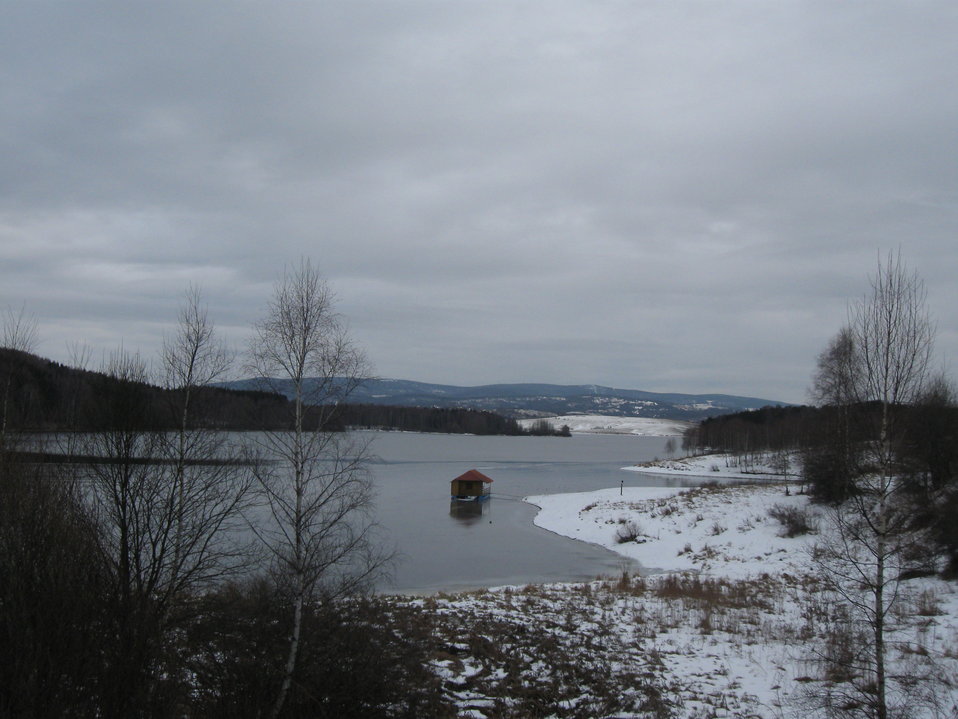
Српски / srpski: autor: Radosav Stojanovic